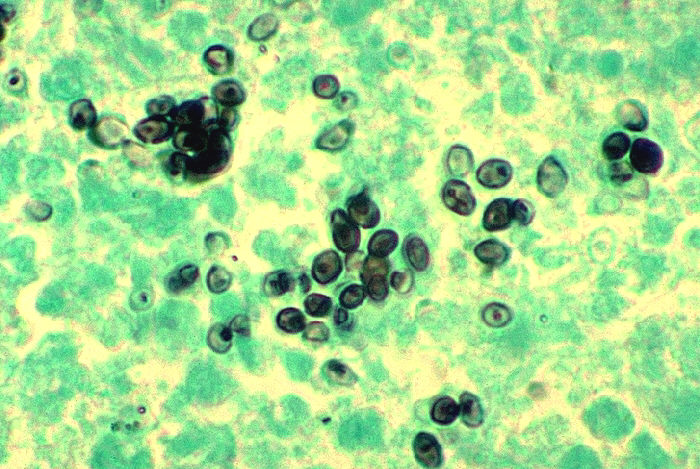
Histopathology of histoplasmosis.